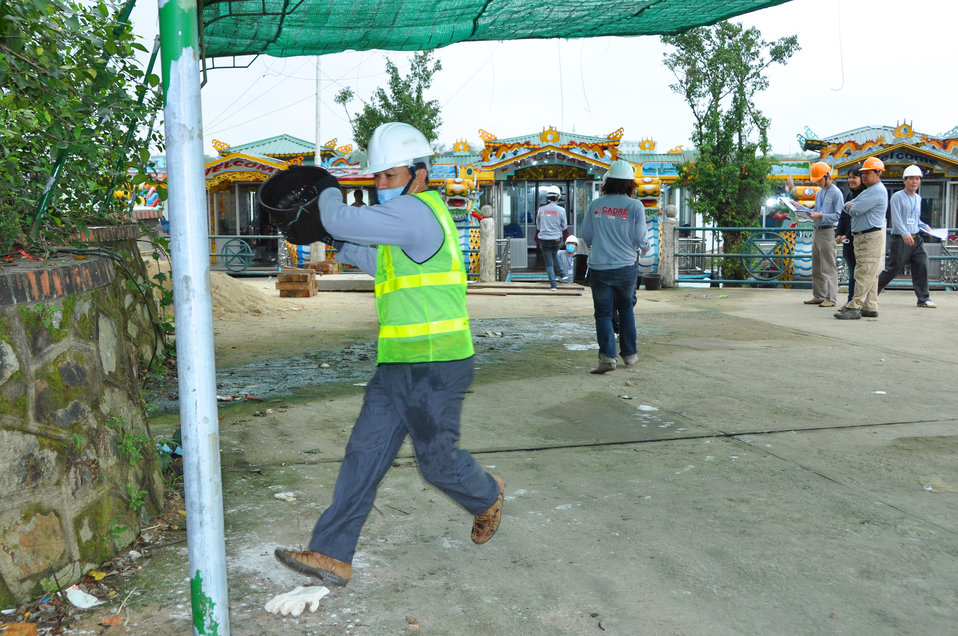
Disaster and Emergency Training Funded by USAID in Hue, Vietnam